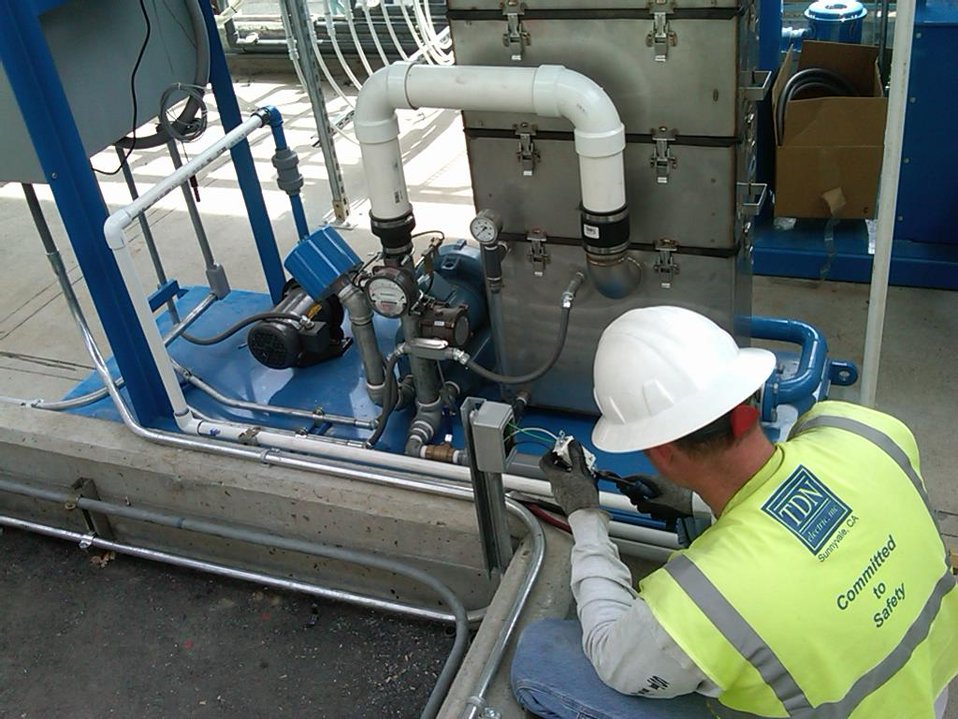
Recovery Act Supports Soil and Debris Cleanup, Groundwater Treatment at SLAC

Recovery Act workers are on track to remove more than 30,000 cubic yards of contaminated soil and debris at the SLAC National Accelerator Laboratory by September 2011.
The Recovery Act invested $14.3 million in legacy cleanup activities at SLAC. In addition to removing contaminated soil and debris that is shipped to local disposal facilities, Recovery Act workers installed three new groundwater treatment systems.